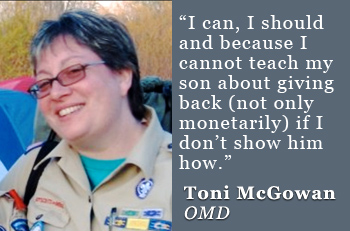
tonimcgowan